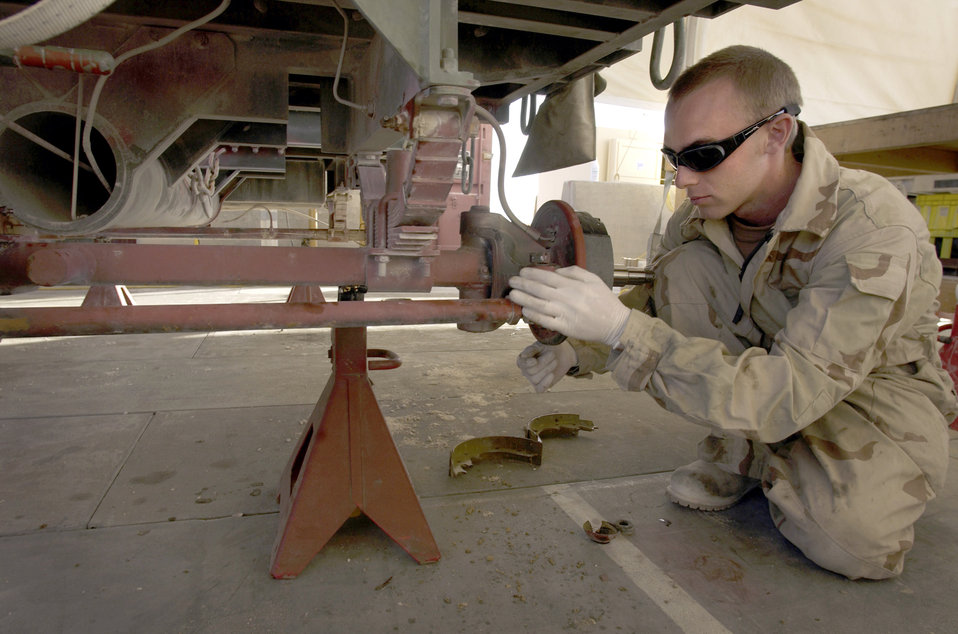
The work never ends

SOUTHWEST ASIA -- Airman 1st Class James Daniels repairs a trailer at a forward-deployed location supporting Operation Iraqi Freedom. Airman Daniels is assigned to the 379th Expeditionary Maintenance Squadron.